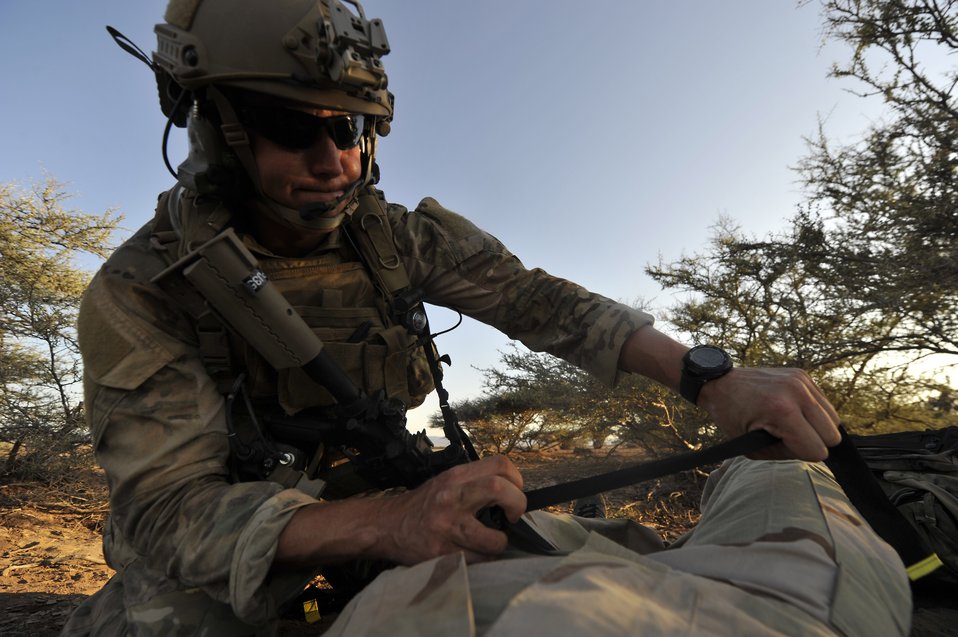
Heroes in training

Senior Airman Eric Humphrey, an 82nd Expeditionary Rescue Squadron pararescueman, splints a simulated broken leg during a training scenario in the Grand Bara Desert, Djibouti, Oct. 21, 2011. After locating casualties, the pararescuemen triaged each patient, treated their wounds and provided security while coordinating air evacuation.